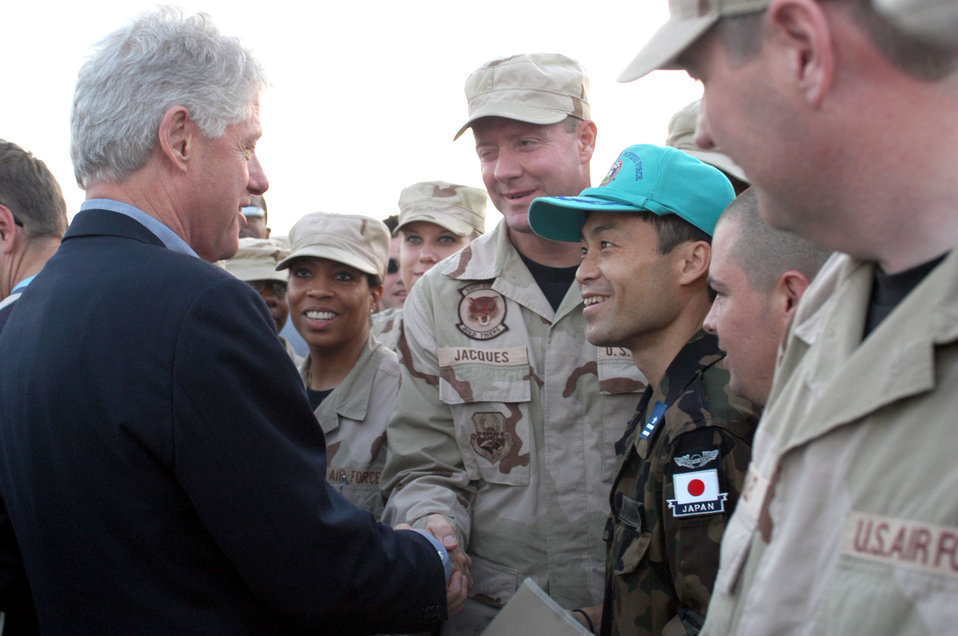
Paying a visit

SOUTHWEST ASIA -- Former President Bill Clinton greets airmen at a deployed location Jan. 12. The former president spent more than one hour shaking hands, signing mementos and posing for photographs during his visit.